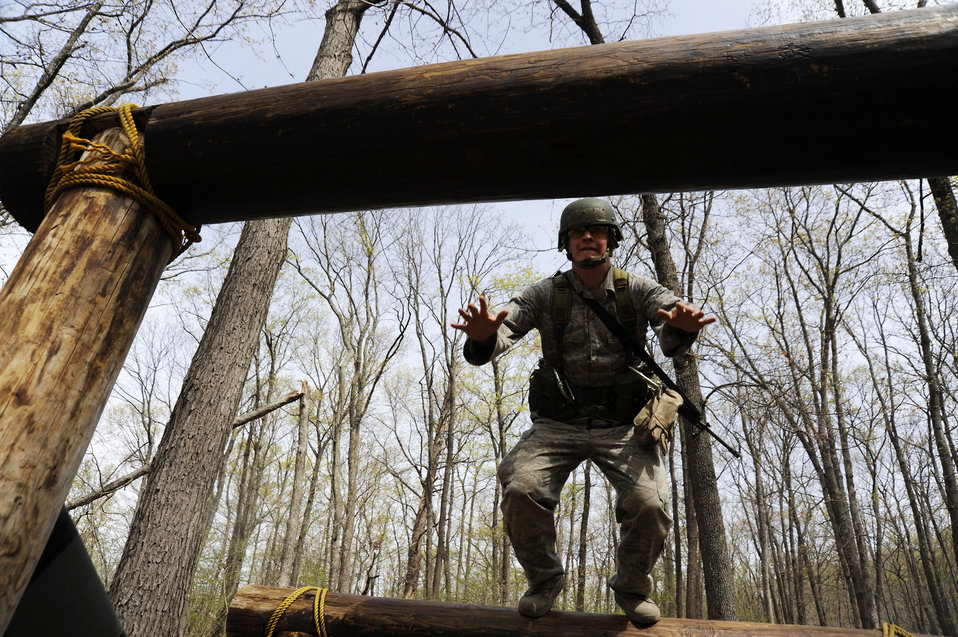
2012 Sandhurst Competition

A U.S. Air Force Academy cadet plans a route April 18, 2012, for the land navigation portion of the 2012 Sandhurst Competition at the U.S. Military Academy in West Point, N.Y. The two-day competition included cadets from around the world.